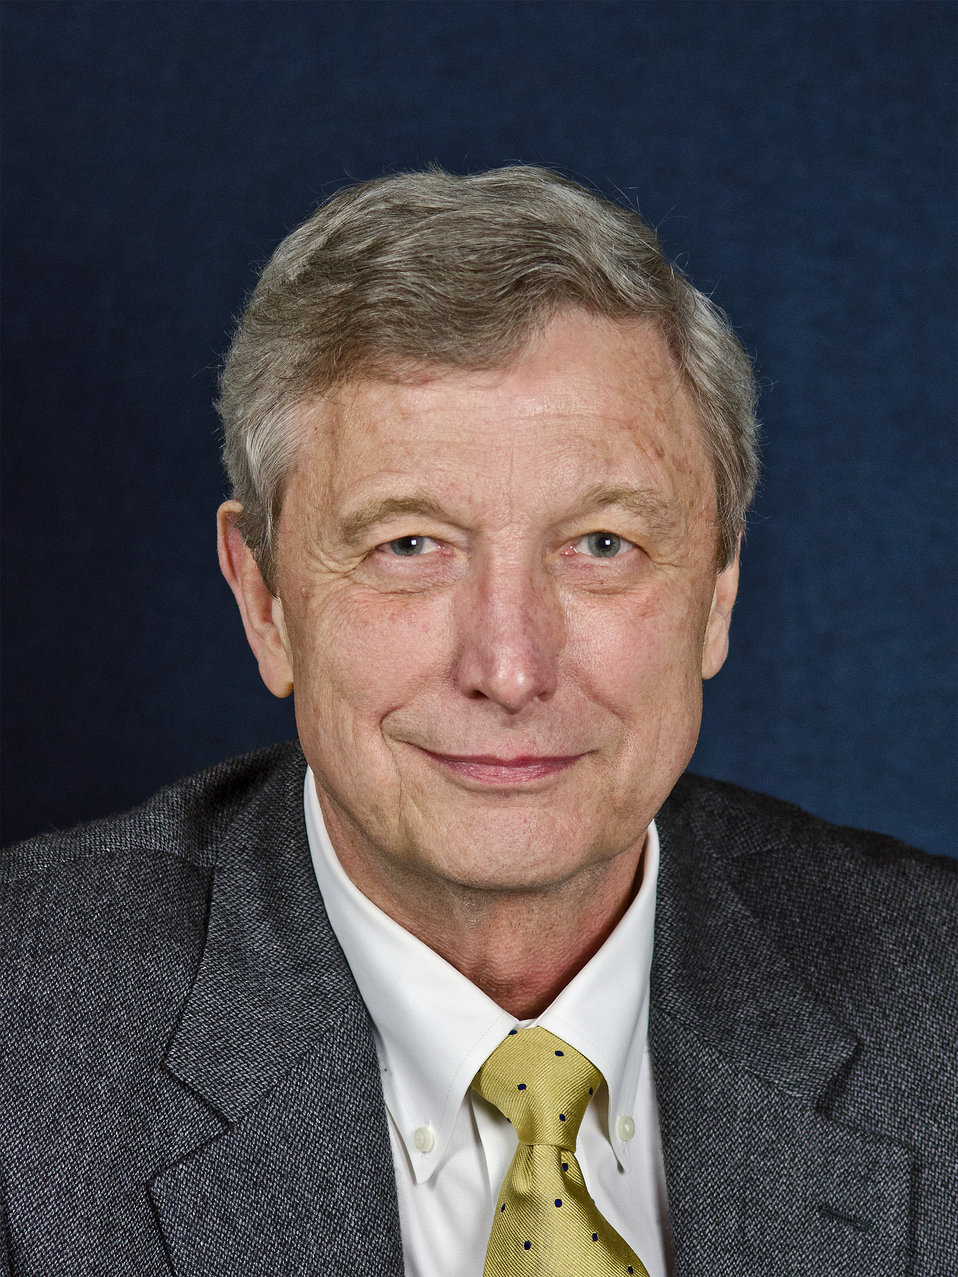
Dr. Joseph L. Dehmer, a 40-year veteran of federal science research and administration, has been named Director of the Physical Measurement Laboratory (PML) of the National Institute of Standards and Technology (NIST). Dehmer is a physicist who served most recently as director of the Division of Physics and Senior Advisor for Strategic Planning at the National Science Foundation (NSF). He takes office on April 22, 2013.